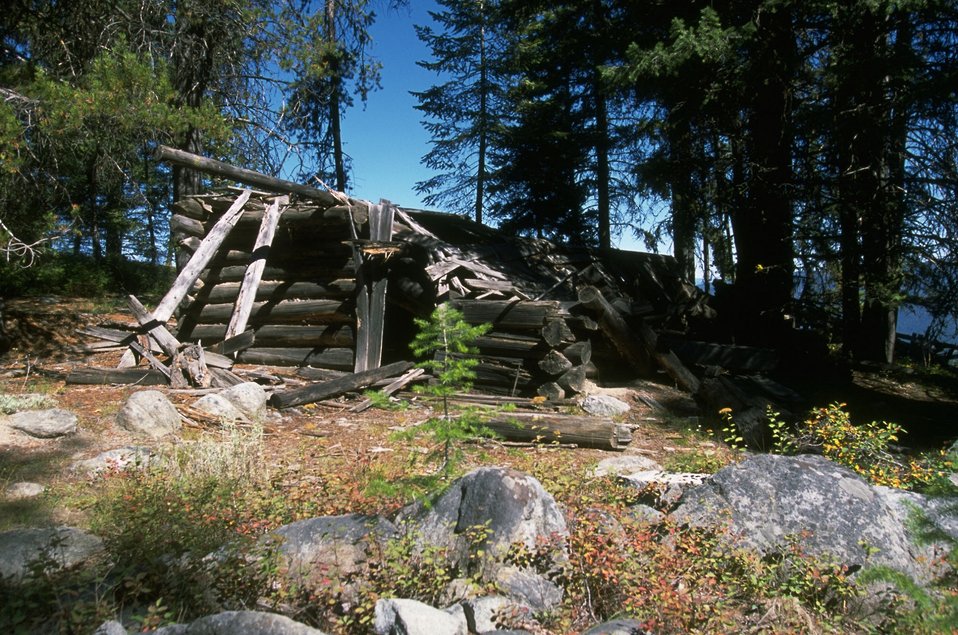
Coloma Ghost Town--collapsing cabin